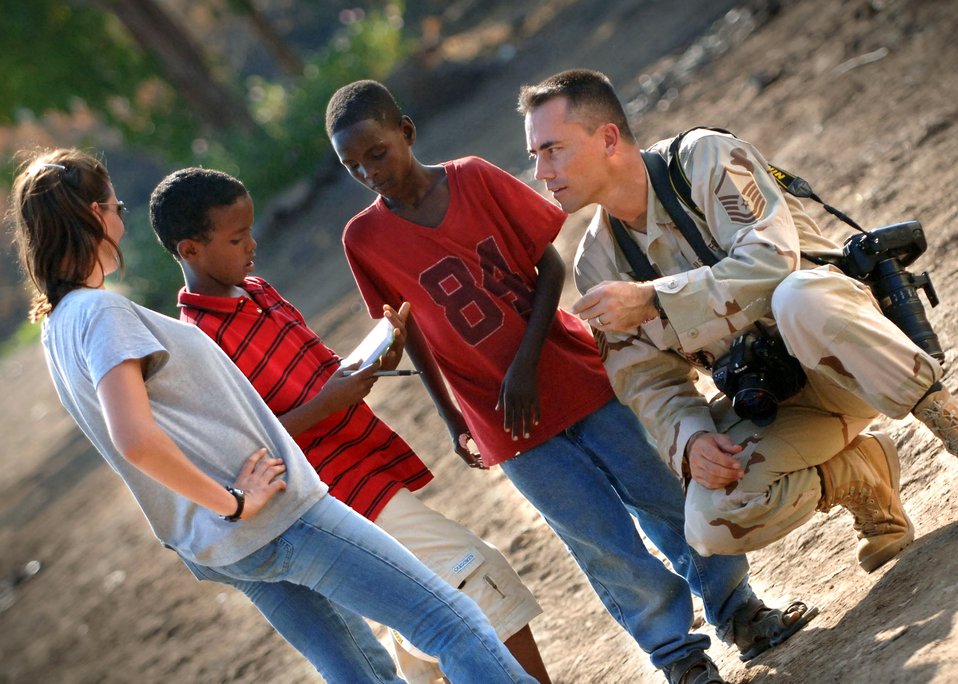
World powers bring soft touch to African neighbors

Master Sgt. Scott Wagers, a photographer from Combined Joint Task Force-Horn of Africa, has two boys from a local boy's orphanage in Djibouti City, Djibouti, write down their names after taking their photographs Dec. 12, 2006. Three times a week U.S. service members from Camp Lemonier and CTF-HOA volunteer to the visit orphanage.